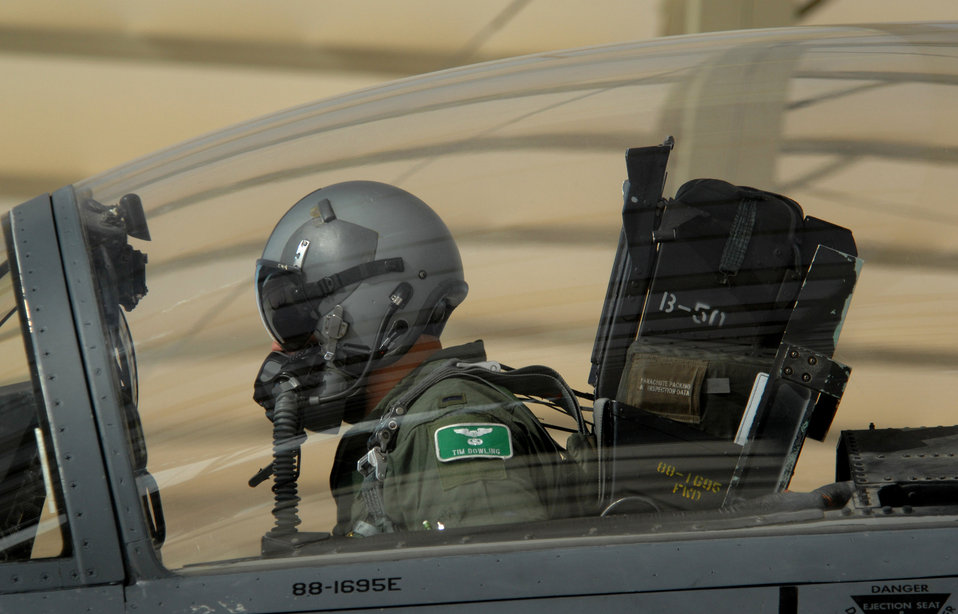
Green Flag launches Strike Eagles into the air

1st Lt. Tim Dowling makes final pre-flight checks on an F-15E Strike Eagle during Exercise Green Flag April 24 at Nellis Air Force Base, Nev. Green Flag is Air Combat Command's premier pre-deployment exercise for units who perform close-air support. The training exercise, which began April 19 and runs through May 4, mirrors many of the irregular warfare-conditions the F-15E aircrews will see while fighting the war on terrorism. During Green Flag, aircrews will try to learn better ways to employ airpower within an irregular warfare environment. Lieutenant Dowling is a pilot with the 335th Fighter Squadron Fighter at Seymor Johnson AFB, N.C.